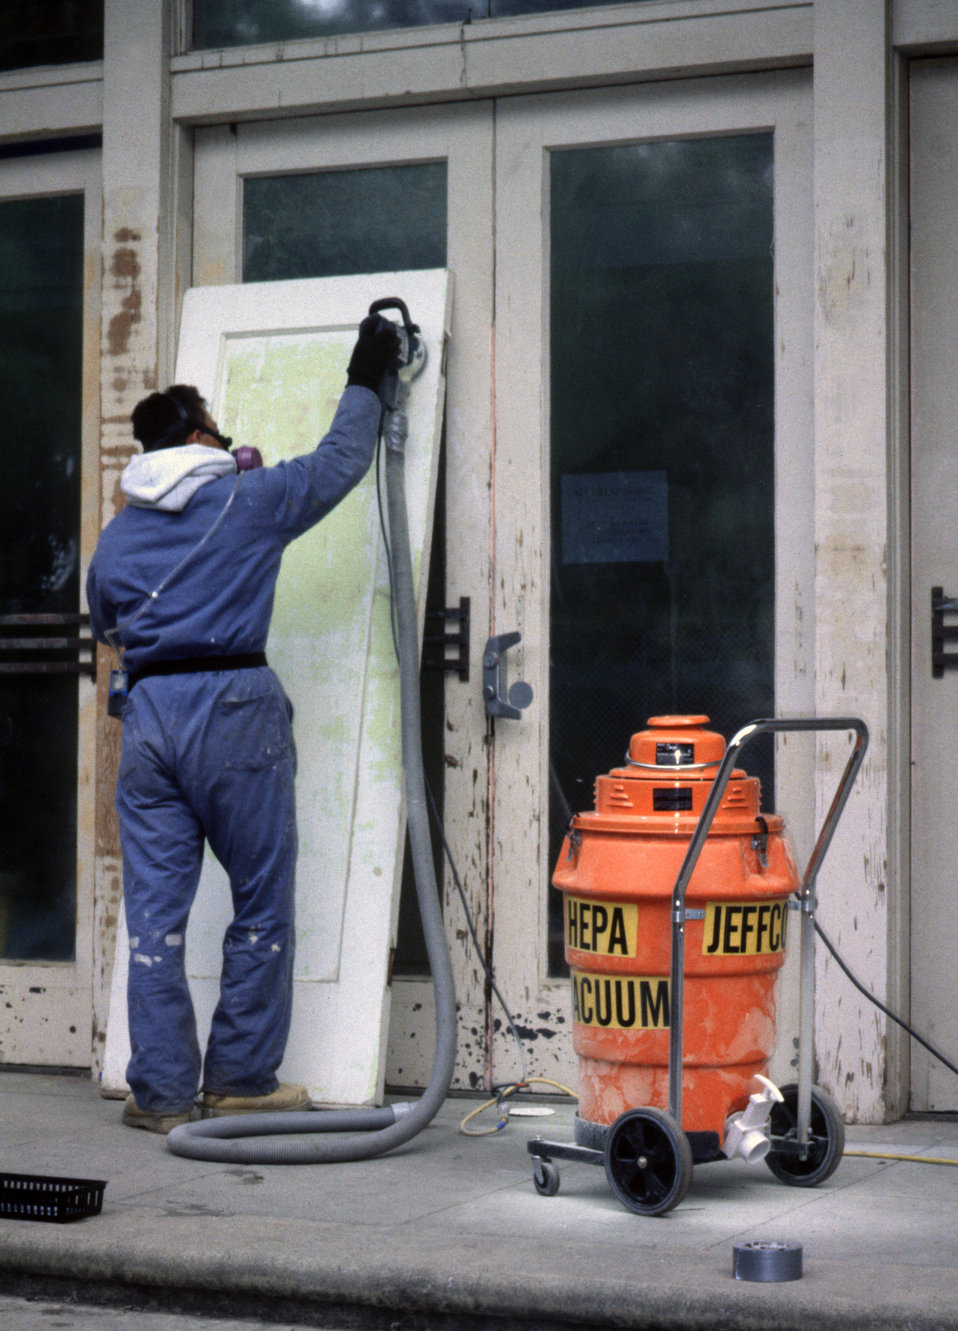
This 1999 photograph shows a worker using a power sander with a high efficiency particulate air filter exhaust system that collected paint particulates, demonstrating an exterior renovation method that was used on residences where lead-based paint was present. This was a low-exposure method.